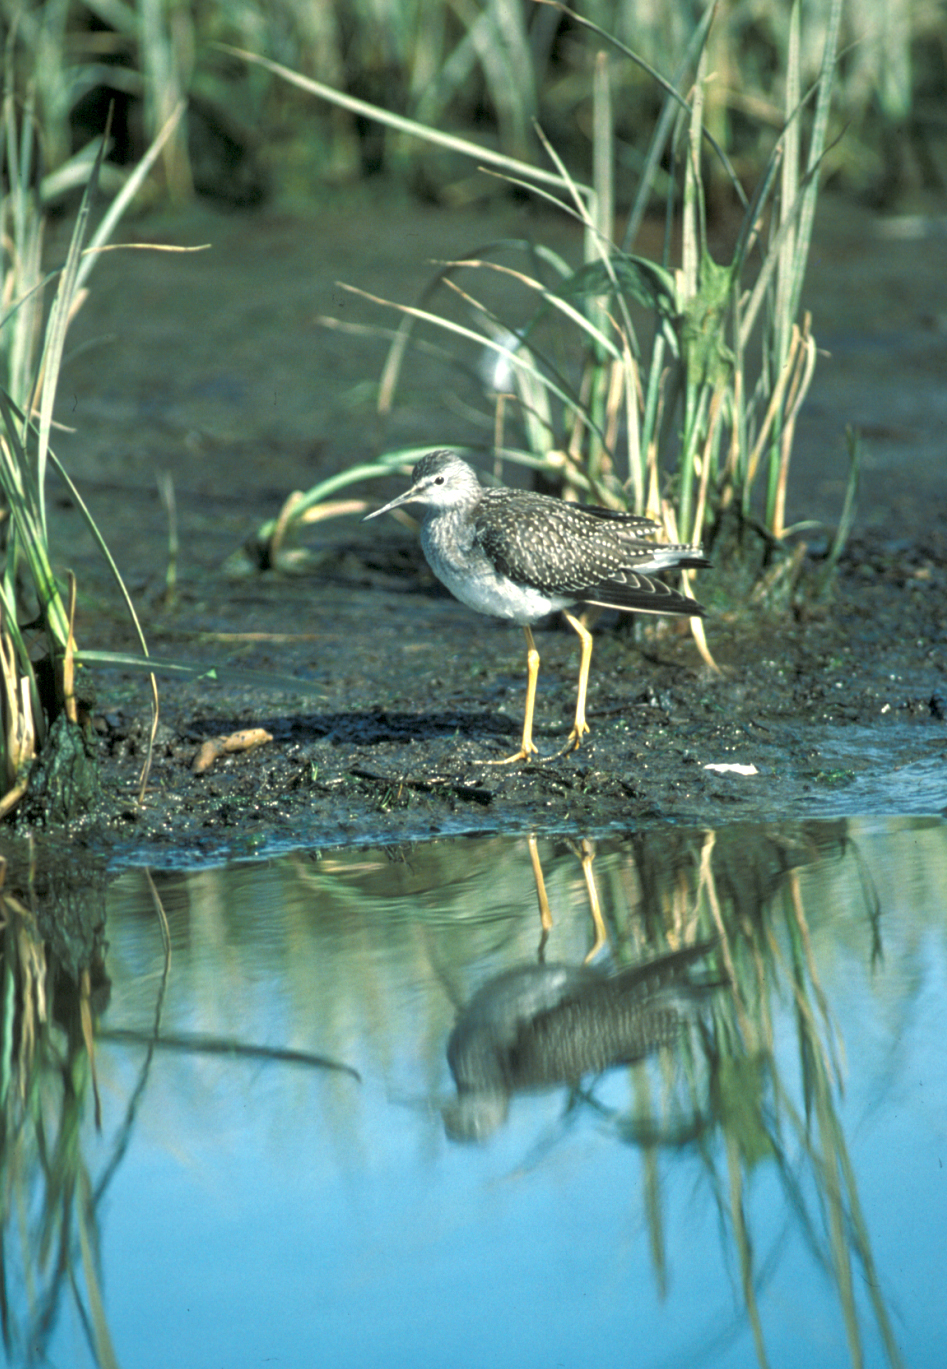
Lesser Yellowlegs

The lesser yellowlegs is just one of the species at Blackwater National Wildlife Refuge that could be affected by climate change and sea level rise.